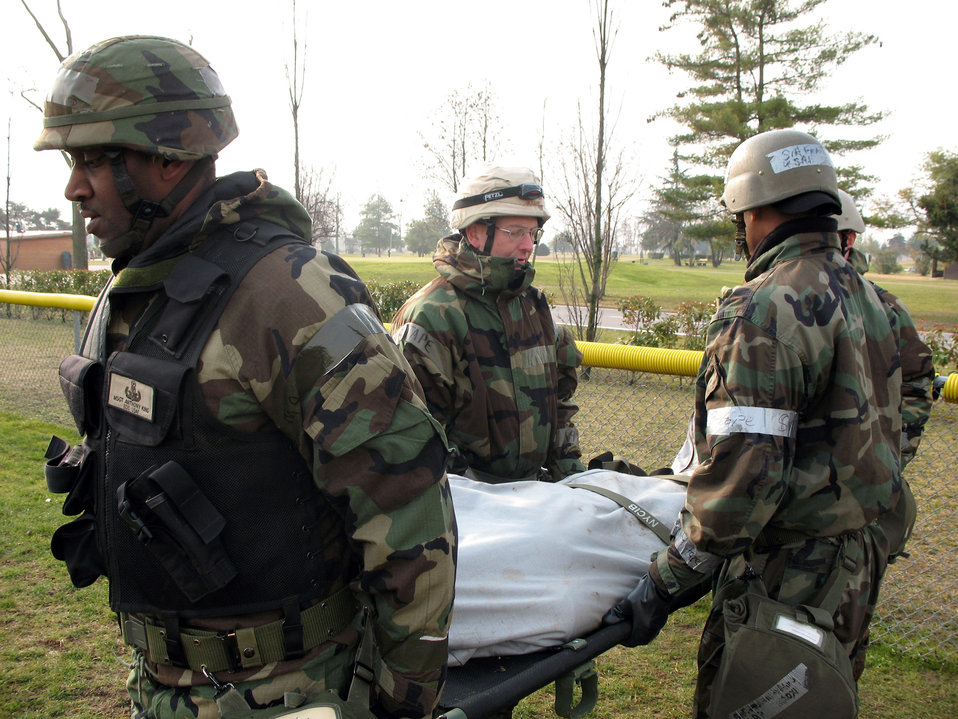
Aviano Airmen train in self aid, buddy care

Airmen carry a litter over a fence while they travel through an obstacle course designed to test their ability to navigate through different terrain Feb. 6 at Aviano Air Base, Italy. The Airmen are training on self aid and buddy care while preparing for an upcoming tactical evaluation of the base.